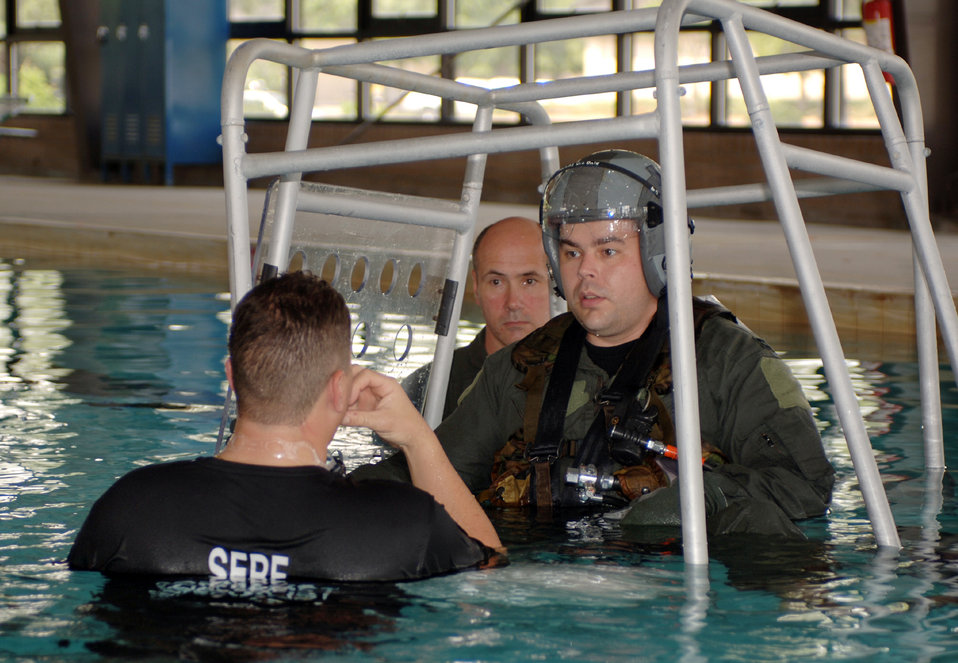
SERE-us business

Capt. Michael Garner prepares to be rolled underwater while harnessed inside a cage at Moody Air Force Base, Ga., on Friday, May 5, 2006. The water survival training simulates the actions an aircrew member must take to safely escape if his or her aircraft crashes into the water. Captain Garner is with the 41st Rescue Squadron.